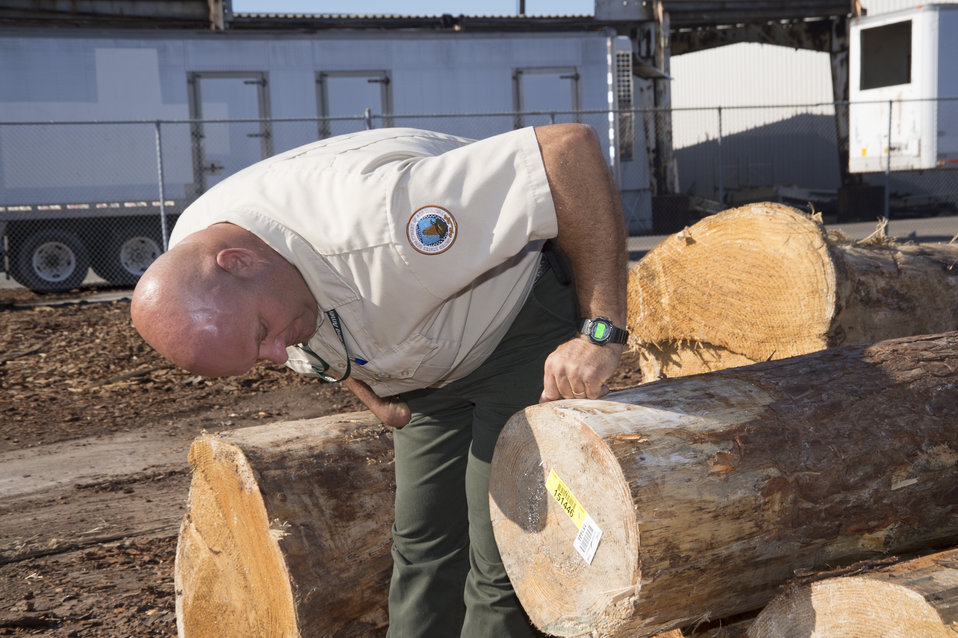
U.S. Department of Agriculture’s (USDA) Animal and Plant Health Inspection Service (APHIS) employee inspects fumigated logs near the Port of New Orleans in New Orleans, LA on Wednesday, Nov. 20, 2013. The fumigation process prevents the spread of any bacteria or insect that might cause harm to a foreign country’s agriculture.